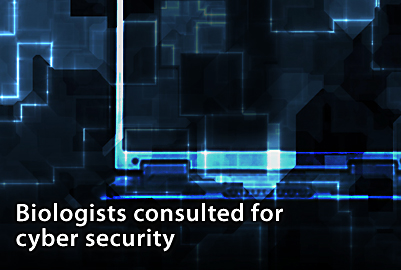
DARPA aims to change cyber security game